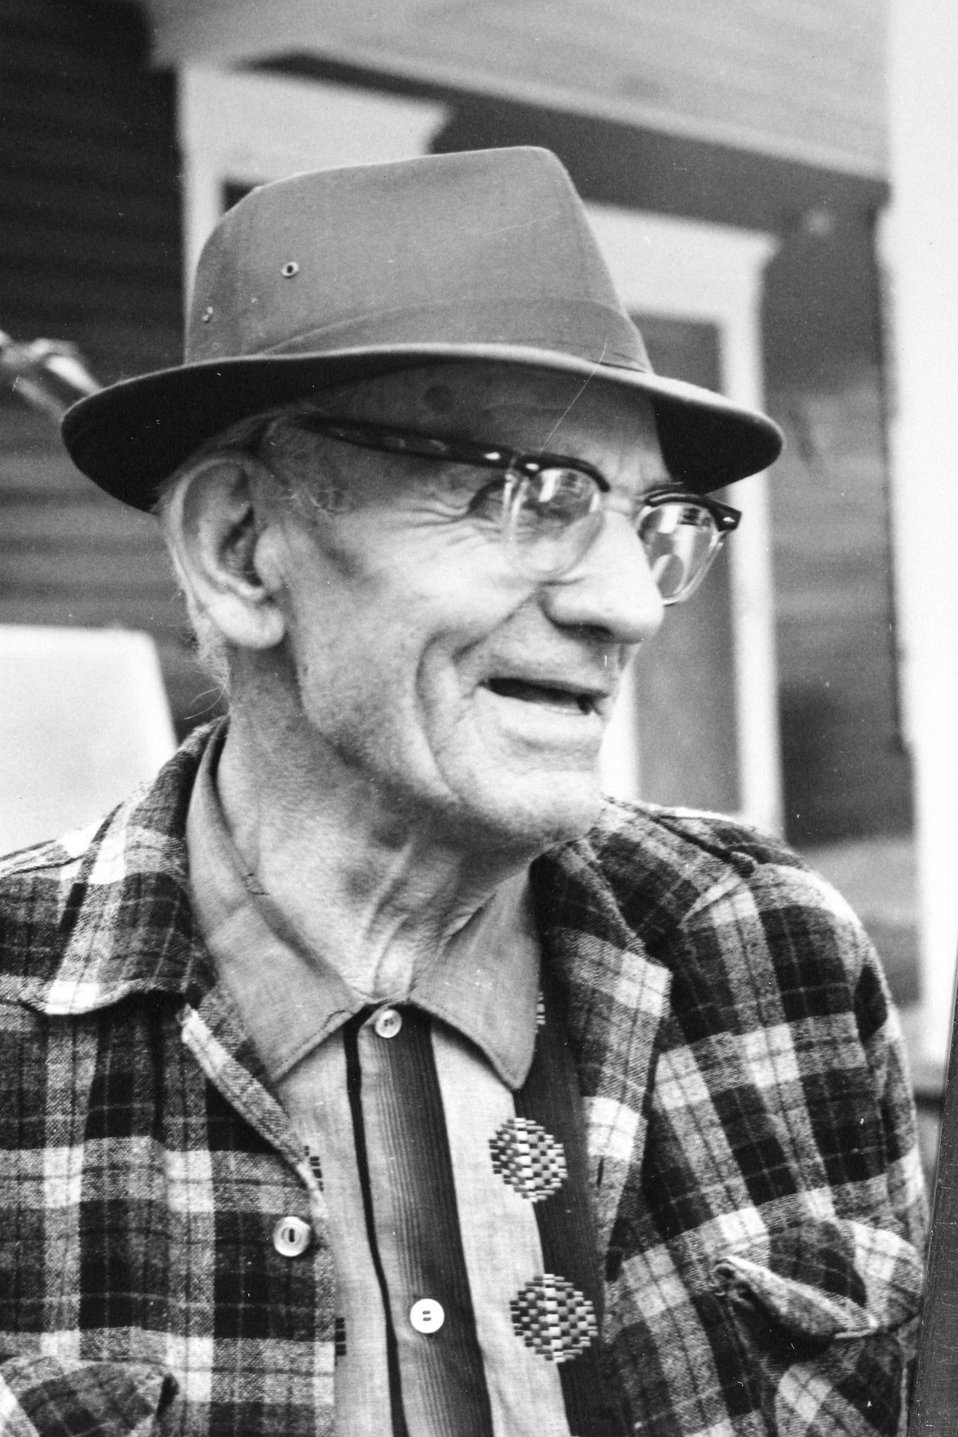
Ivin Billings C. 1977